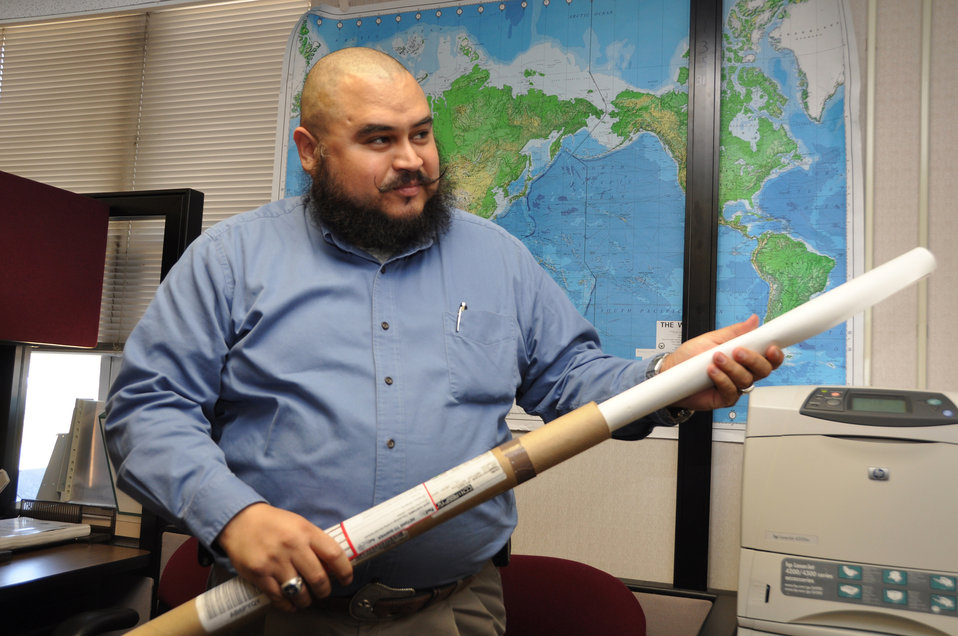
Logistics Agency overnights 38,000 maps for Haiti relief

Albert Zamora, Hydrographic/Digital Section chief in the Defense Supply Center Richmond, Va.'s Mapping Customer Operations Division, and other team members have shipped 38,000 maps and charts since last week's earthquake in Haiti to military units on scene and en route to support disaster relief efforts there.